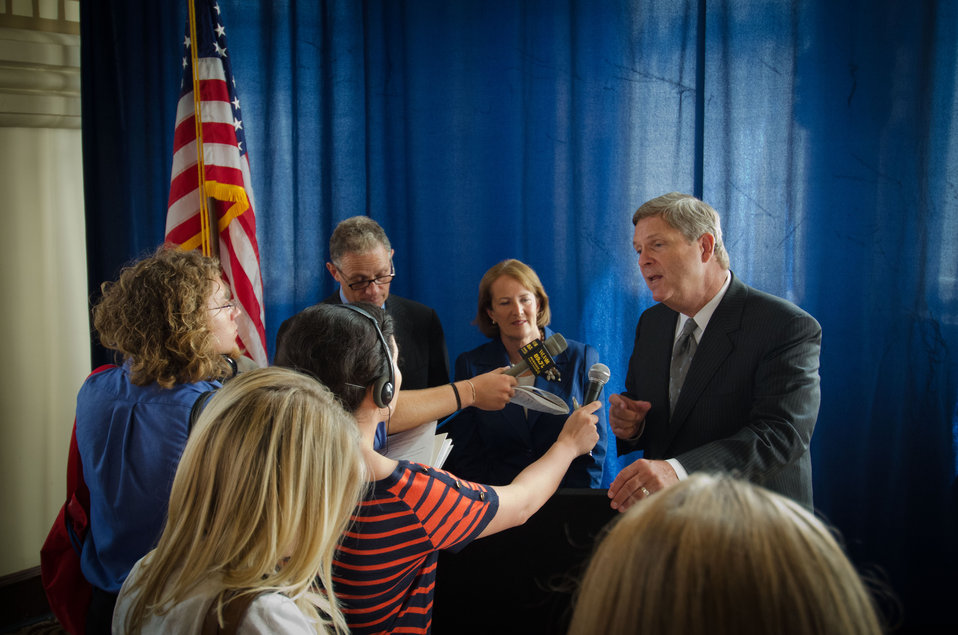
Agriculture Secretary Tom Vilsack meets with members of the press after speaking at the National Export Initiative (NEI) Small Business Tour in Milwaukee, WI, on Wednesday, August 3, 2011. An important goal of the NEI is to provide additional assistance to small and medium-sized businesses, which are major drivers of job creation. The NEI is assisting small and medium-sized businesses win more foreign government contracts, find buyers worldwide, participate in more trade missions and trade shows, receive more export financing, and learn new ways to sell products and services overseas.